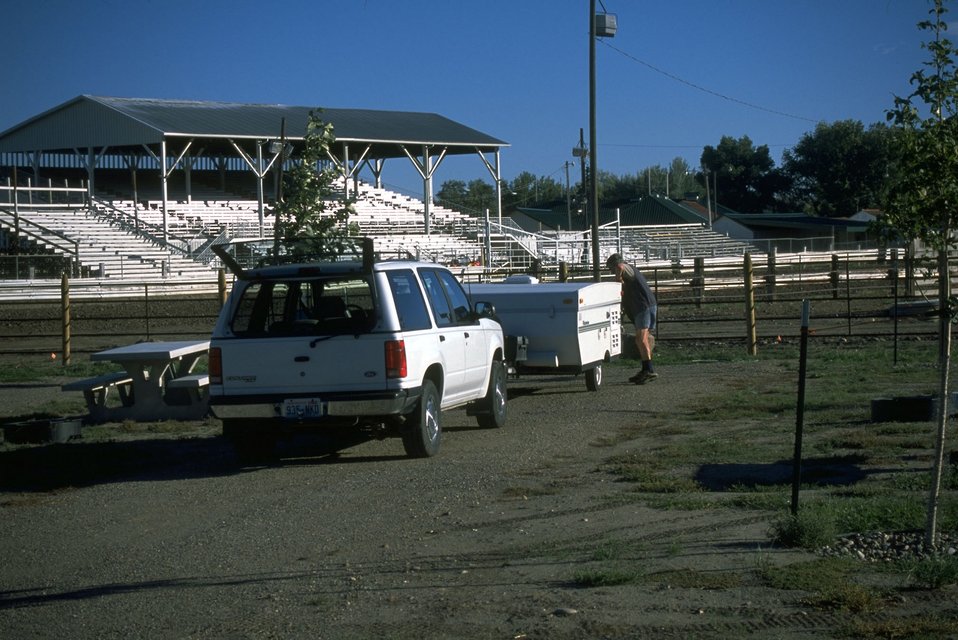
Canoe launch campgrounds at Fort Benton fairgrounds